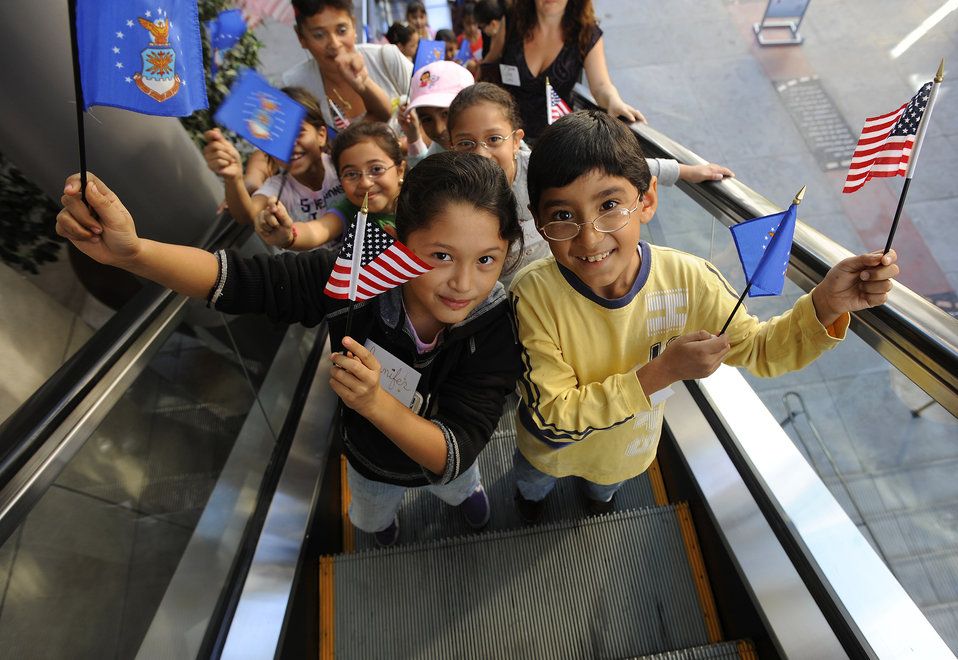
Air Force Week kicks off in Los Angeles

Bus loads of local school children make their way to the balconies of the Hollywood and Highland Plaza on Nov. 14 in Los Angeles for the proclamation ceremonies for Air Force Week-Los Angeles. The ceremonies included performances by the Air Force Honor Guard Drill Team and Air Force Band of the Golden West with flyovers by several different Air Force aircraft and interactive expos. Air Force Week-Los Angeles is Nov. 14 to 21 and has events throughout the area.